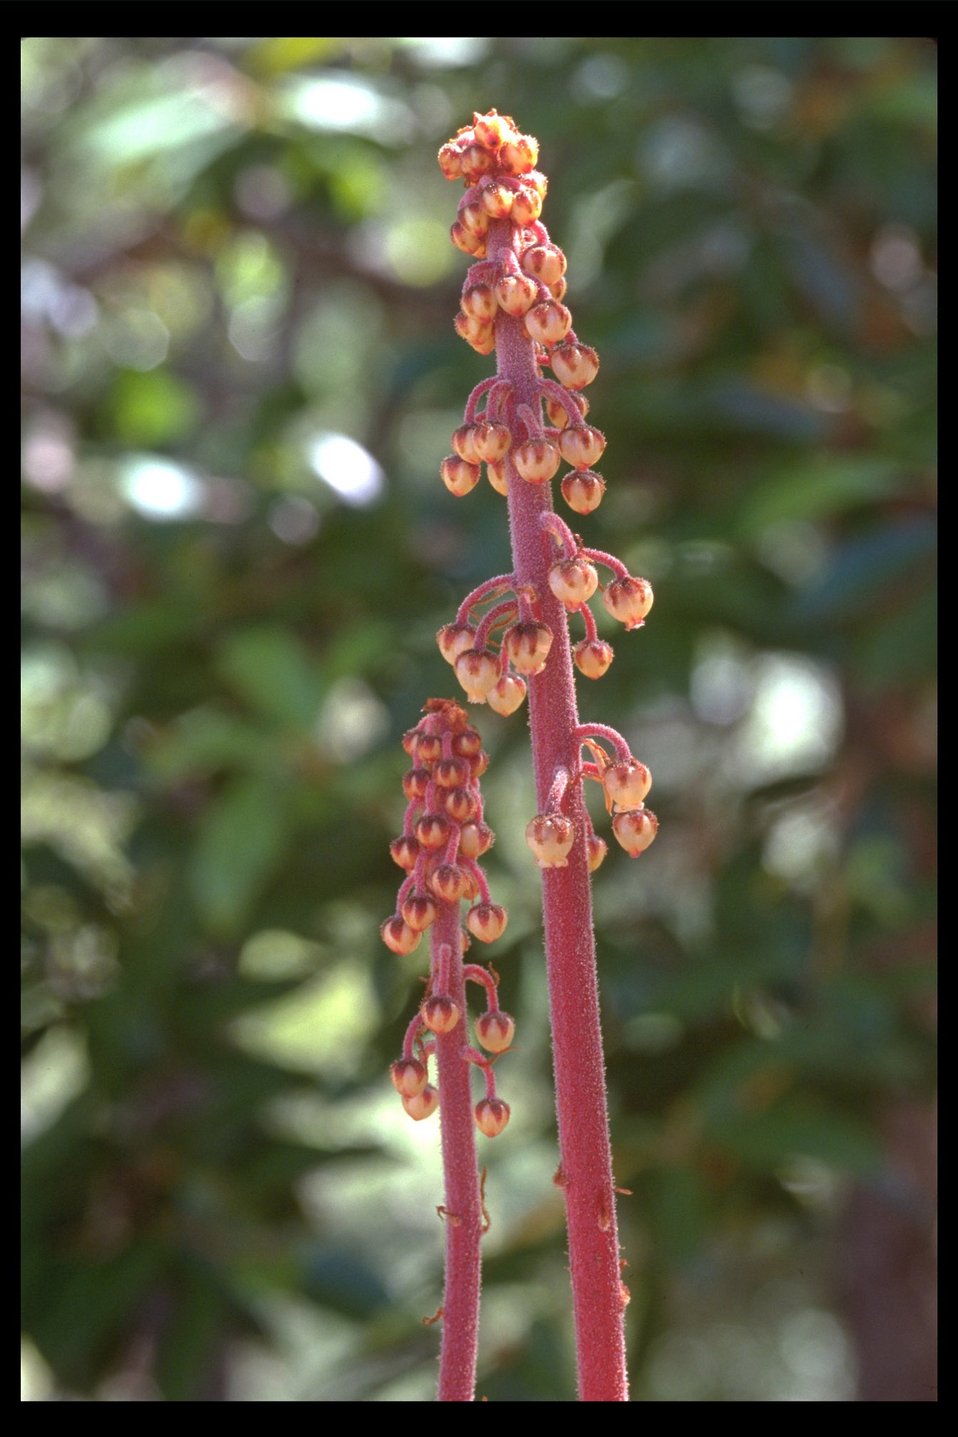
Pine-drops (Pterospora andromedea) at Upper Trail Creek.